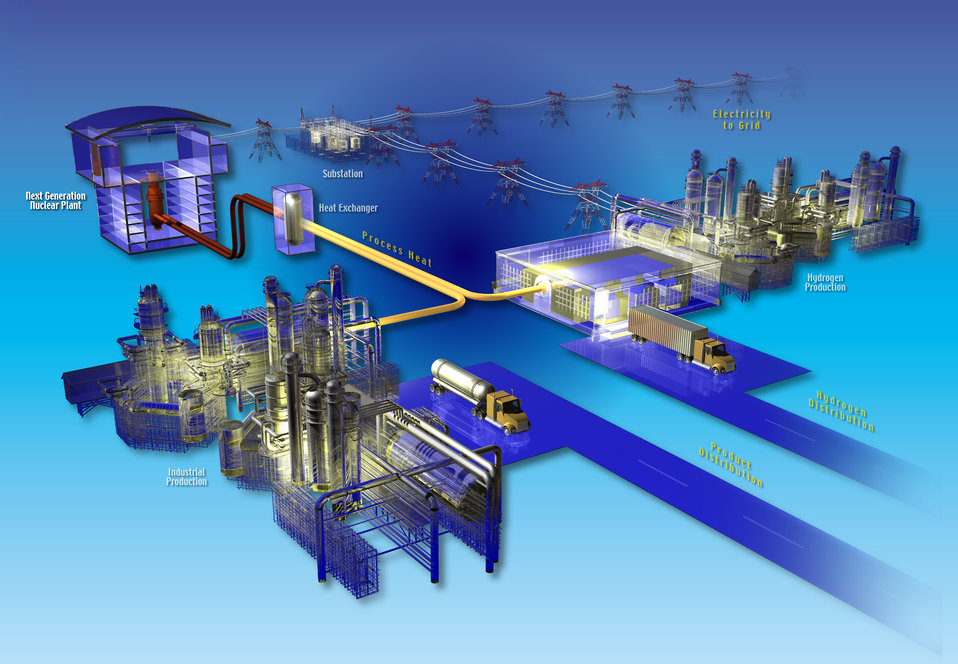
At Idaho National Laboratory, the Next Generation Nuclear Plant will produce heat and hydrogen for industrial manufacturing as well as electricity for homes.